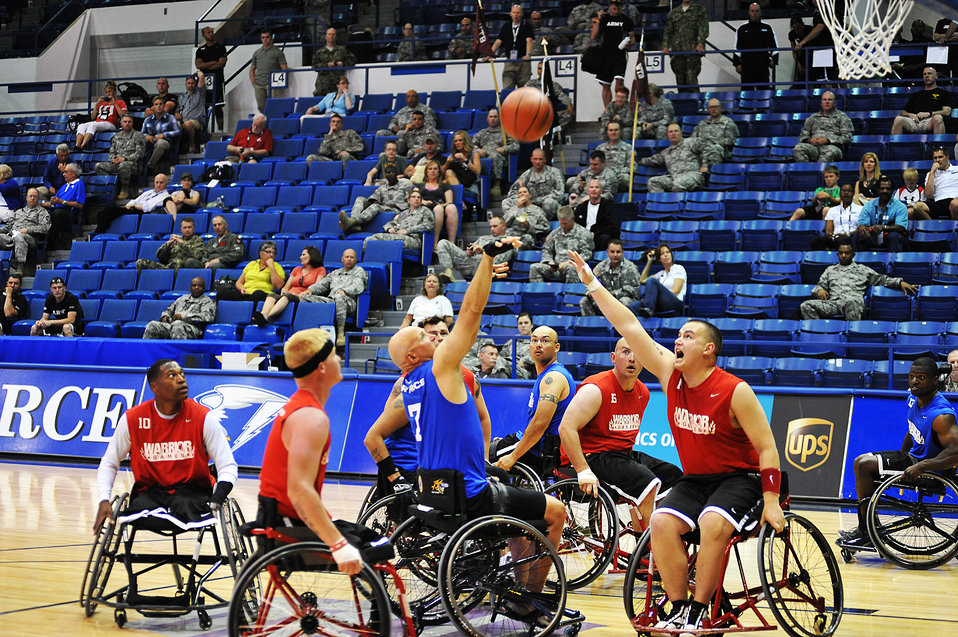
Warrior Games

Damian Orslene (blue shirt) shoots the basketball against members of the Marine Corps team May 4, 2012, during Warrior Games at the U.S. Air Force Academy in Colorado Springs, Colo. The Air Force lost to the Marines by a score of 37-21, but won the bronze medal.